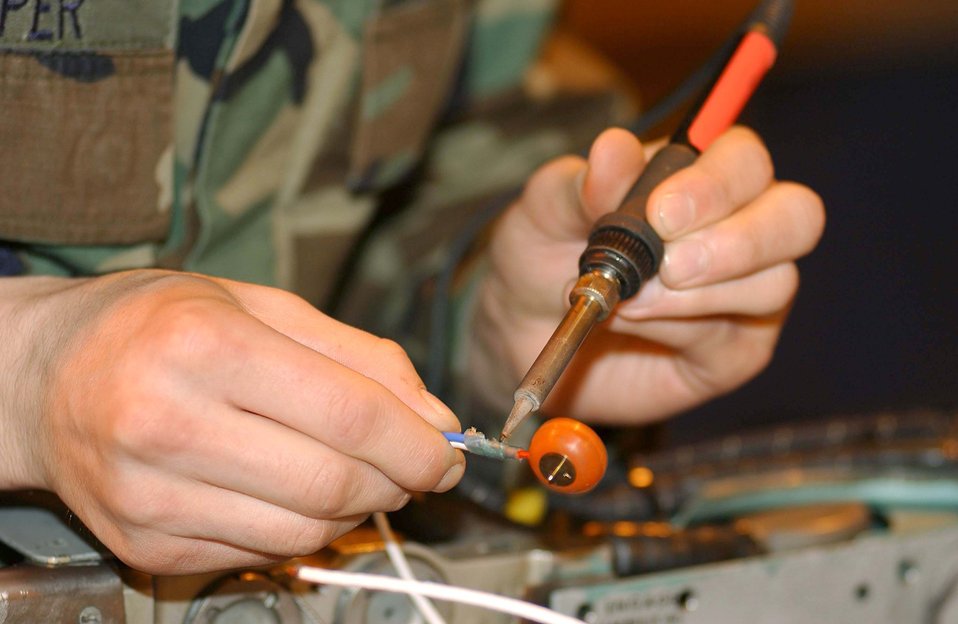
A good desoldering

ROYAL AIR FORCE LAKENHEATH, England -- Airman 1st Class Jeremy Clapper desolders the firing contact on a LAU-106 missile launcher here April 7. Airman Clapper is an armament systems apprentice with the 48th Munitions Squadron.